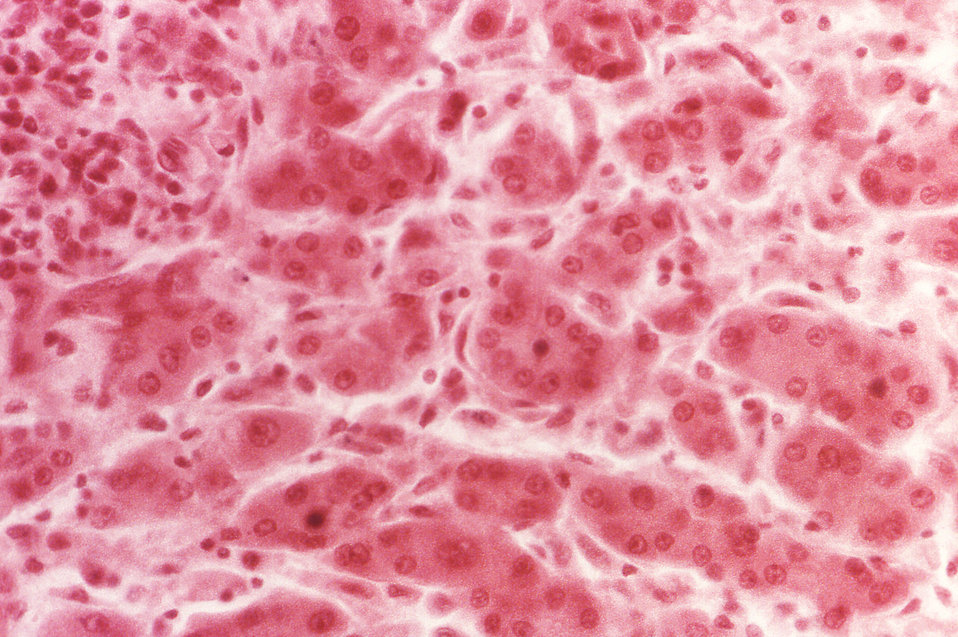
Under a magnification of 100X, this hematoxylin-eosin-stained (H&E) photomicrograph depicts the cytoarchitectural changes found in a liver tissue specimen extracted from a viral hepatitis patient. In this particular view, note that there are 'biliary thrombi in the center of pseudocanaliculi, as well as a histiolymphocytic infiltrate'.